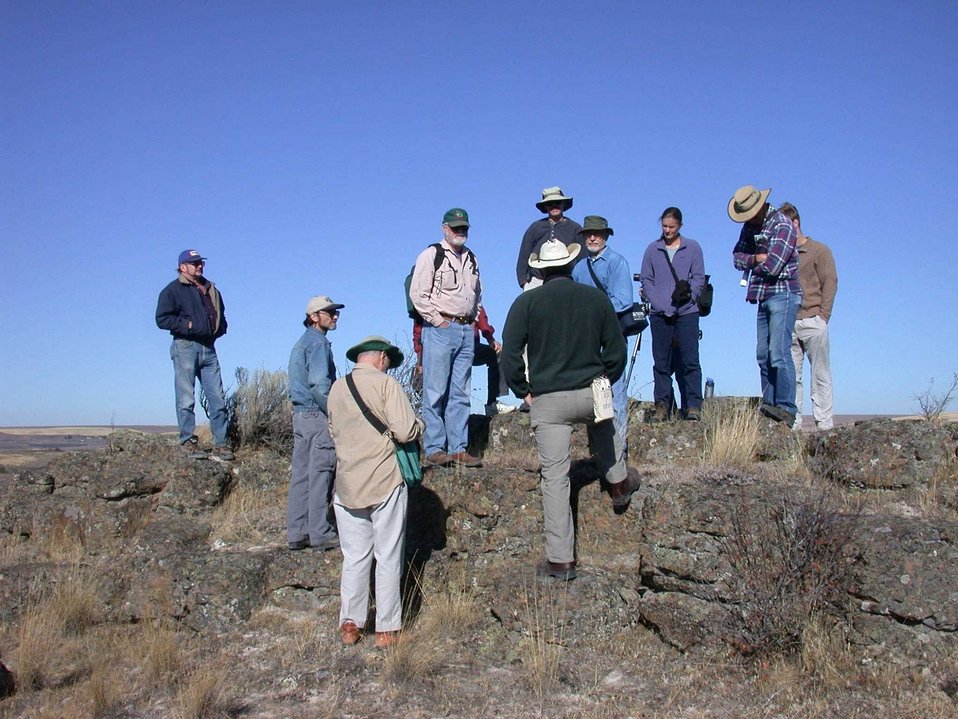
Sprague Parcel Geology Field Trip